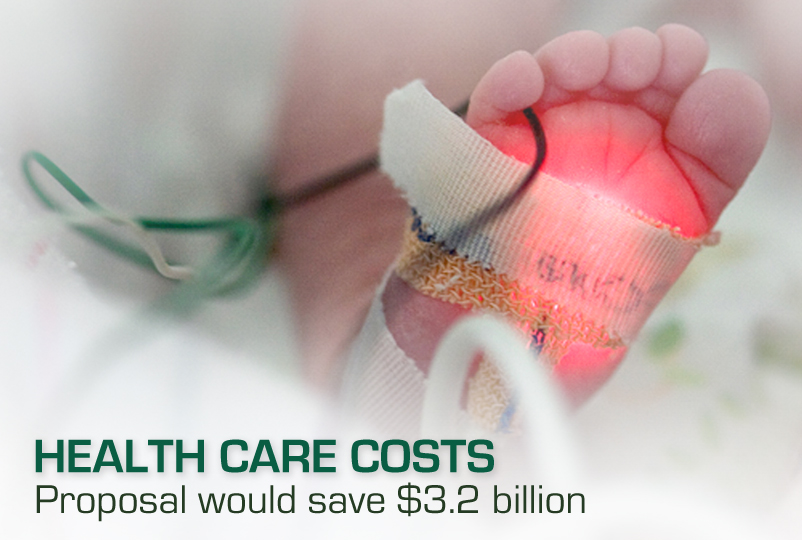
Health Care Costs